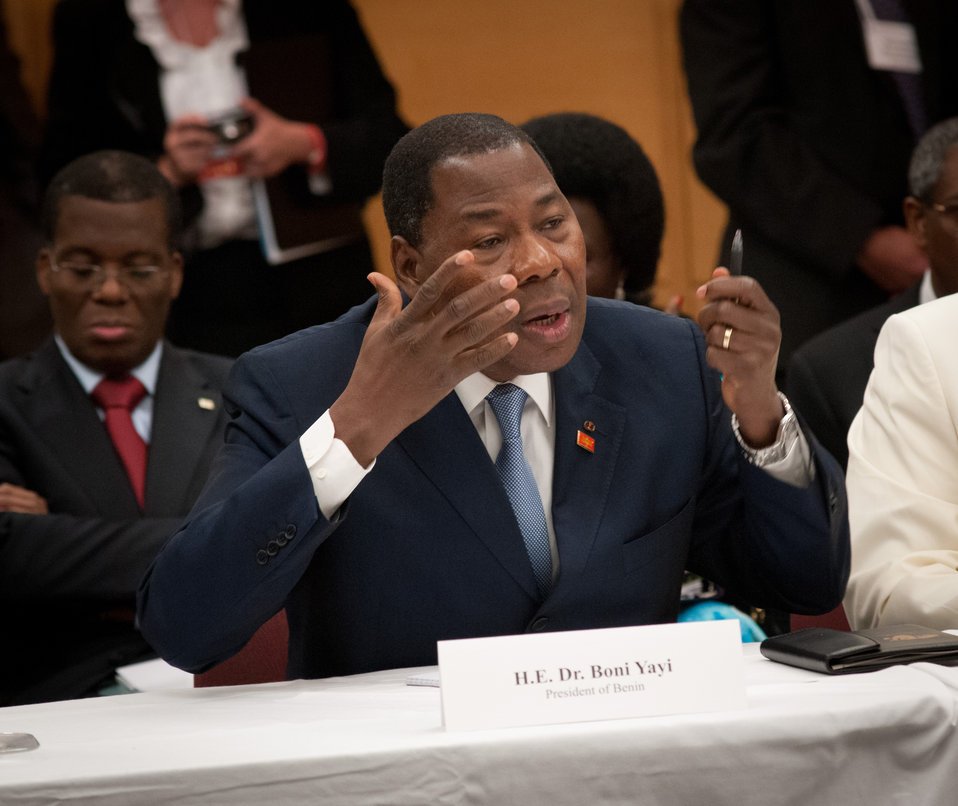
President of Benin His Excellency Dr. Boni Yayi makes remarks at the meeting of African Heads of State conference at the Ronald Reagan Federal Building in Washington, D.C., on Friday, May 18, 2012.